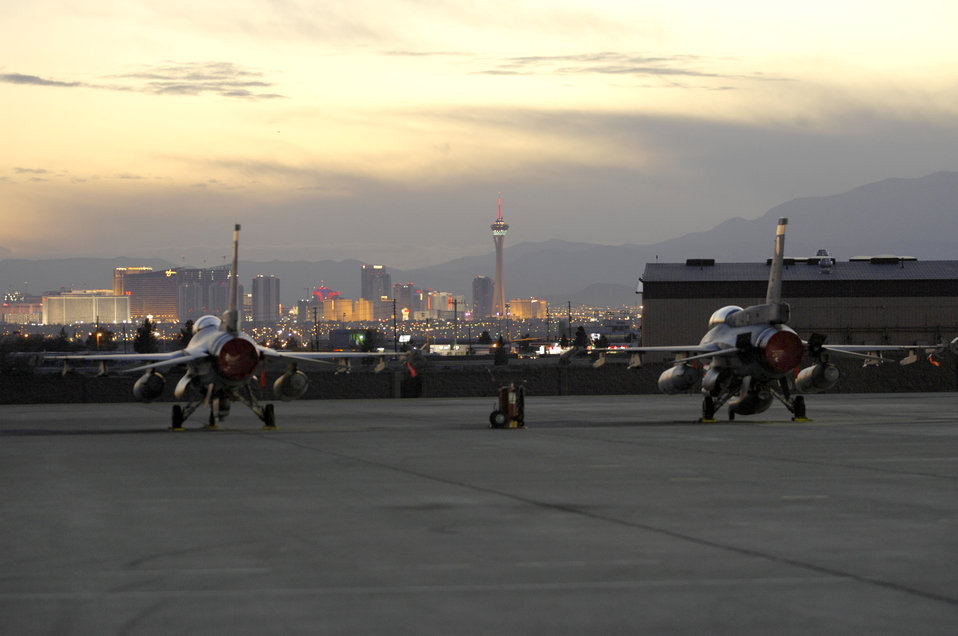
Singapore F-16s in Vegas

Two F-16s from the Republic of Singapore air force sit on the flightline before a Jan. 23 mission at Nellis Air Force Base, Nev. The Republic of Singapore air force is currently at Nellis AFB participating in Red Flag 08-2.1.